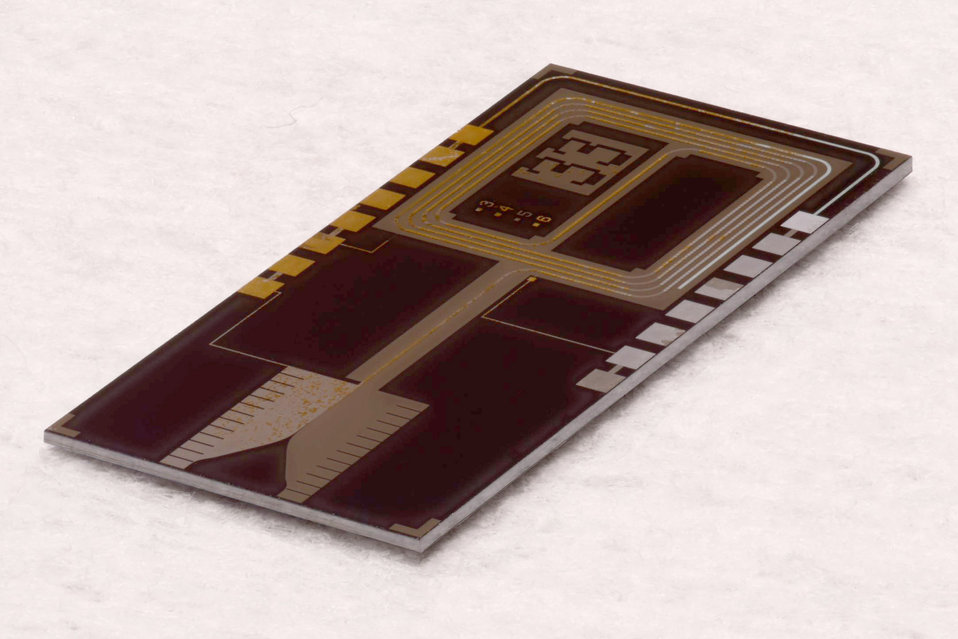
1-volt standard chip

(1985) First practical, stable, and easy to use 1-volt standard chip. From the History of NIST Quantum Voltage Standards.